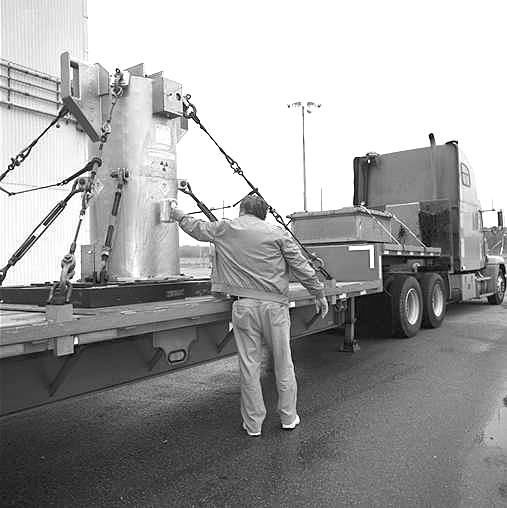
SPENT FUEL ARRIVING FROM FOREIGN COUNTRIES TO DOE'S SAVANNAH RIVER SITE.

IN OCTOBER, 2001 TWELVE CONTAINERS OF SPENT FUEL ARRIVED AT THE SRS. THE CONTAINERS ARE MOVED TO FLATBEDS FOR UNLOADING INTO DEEP PART OF THE UNDERWATER STORAGE BASIN WHERE THE FUEL ASSEMBLIES ARE REMOVED FROM THE CONTAINERS AND PLACED IN STORAGE TUBES INSIDE THE L BASIN.